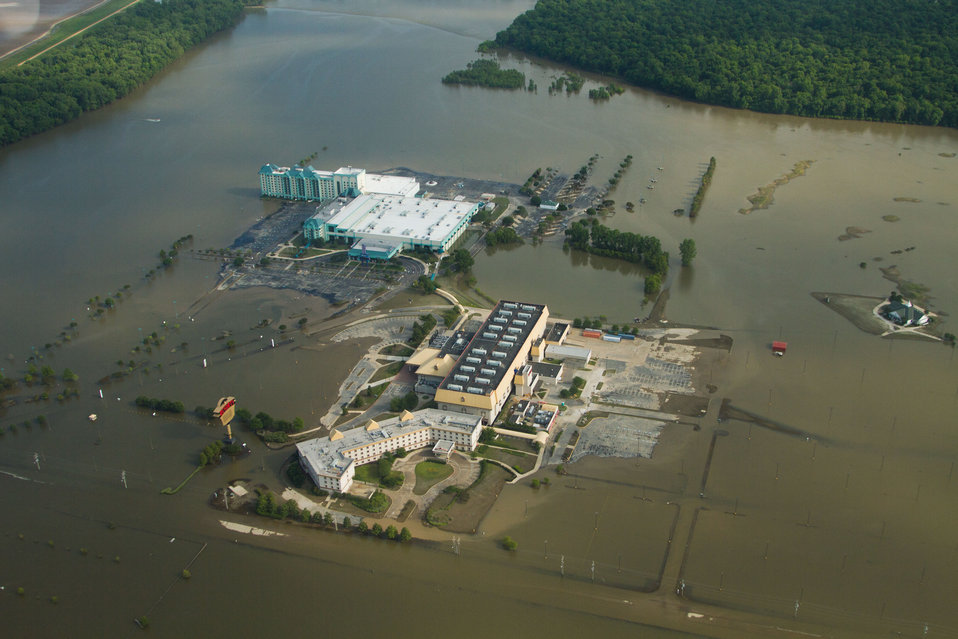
Aerial view of some of the casinos in Tunica, MS. Surrounded by flood waters from the Mississippi River, on Thursday, May 19, 2011. Aerial platform was a UH-60 Blackhawk commanded by Col. Kennedy and his flight crew from the Army Aviation Support Facility #1 at Hawkins Field in Jackson.